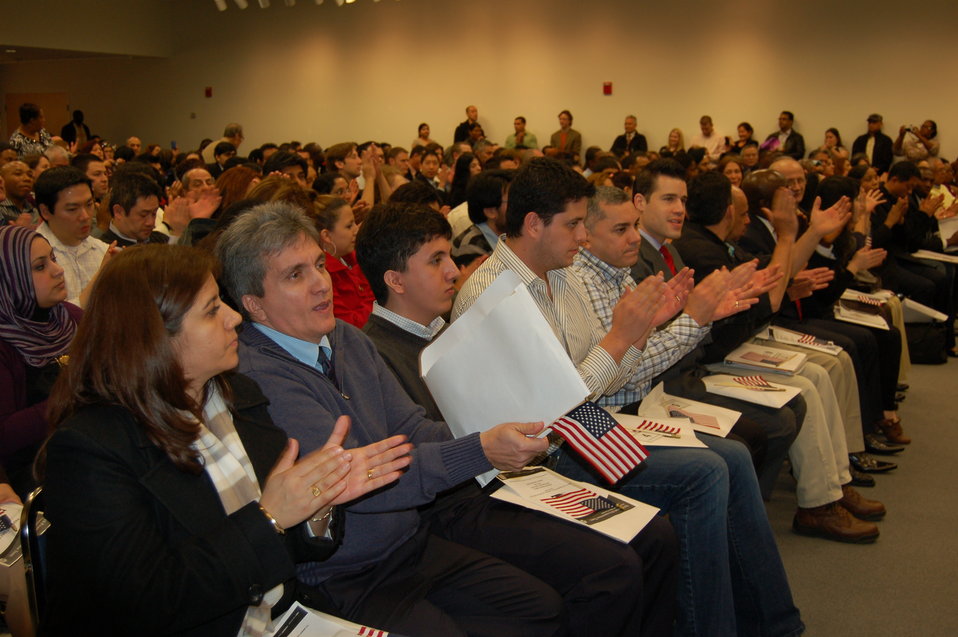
Naturalization Ceremony